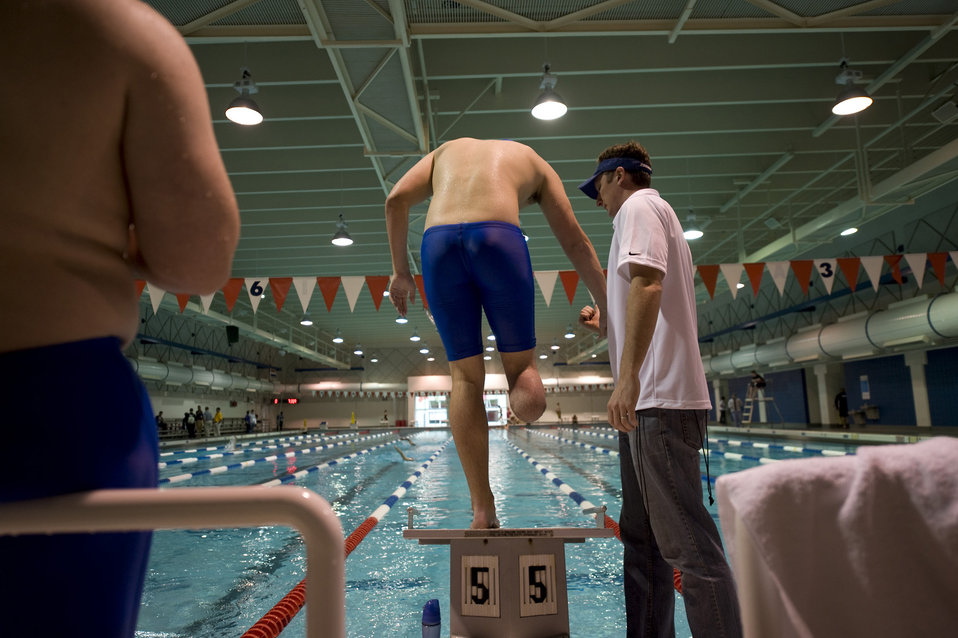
Warrior Games Airmen prepare for competition

Second Lt. Ryan McGuire prepares to dive off the starting block during swim practice May 11, 2010, at the Olympic Training Center in Colorado Springs, Colo. Lieutenant McGuire is a below-the-knee-amputee competing in the inaugural Warrior Games through May 14, 2010.